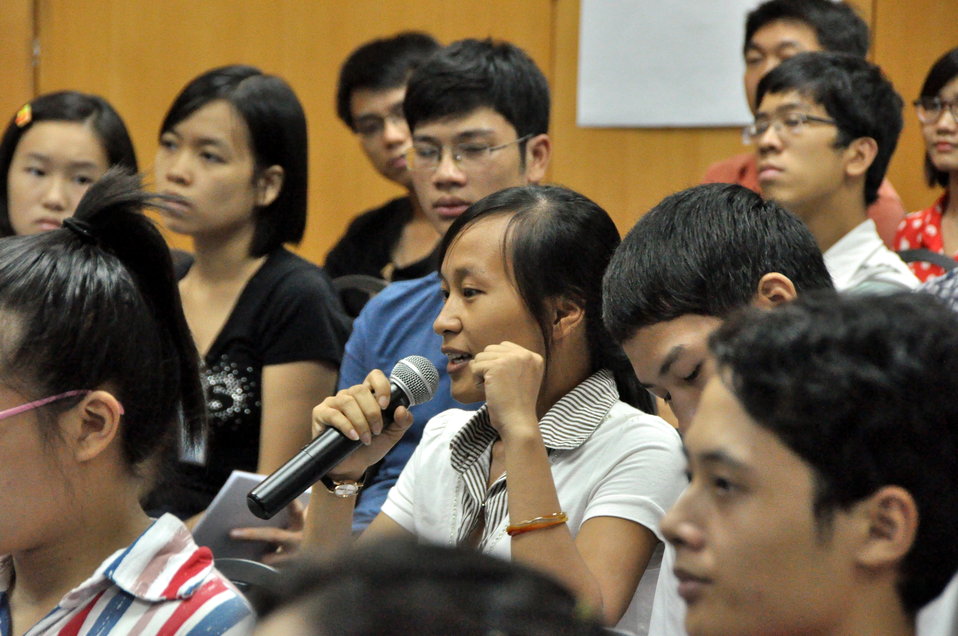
International Youth Day 2013: USAID hosts a lively discussion and group exercise on how youth can join in to advance development

Hanoi, August 12, 2013.